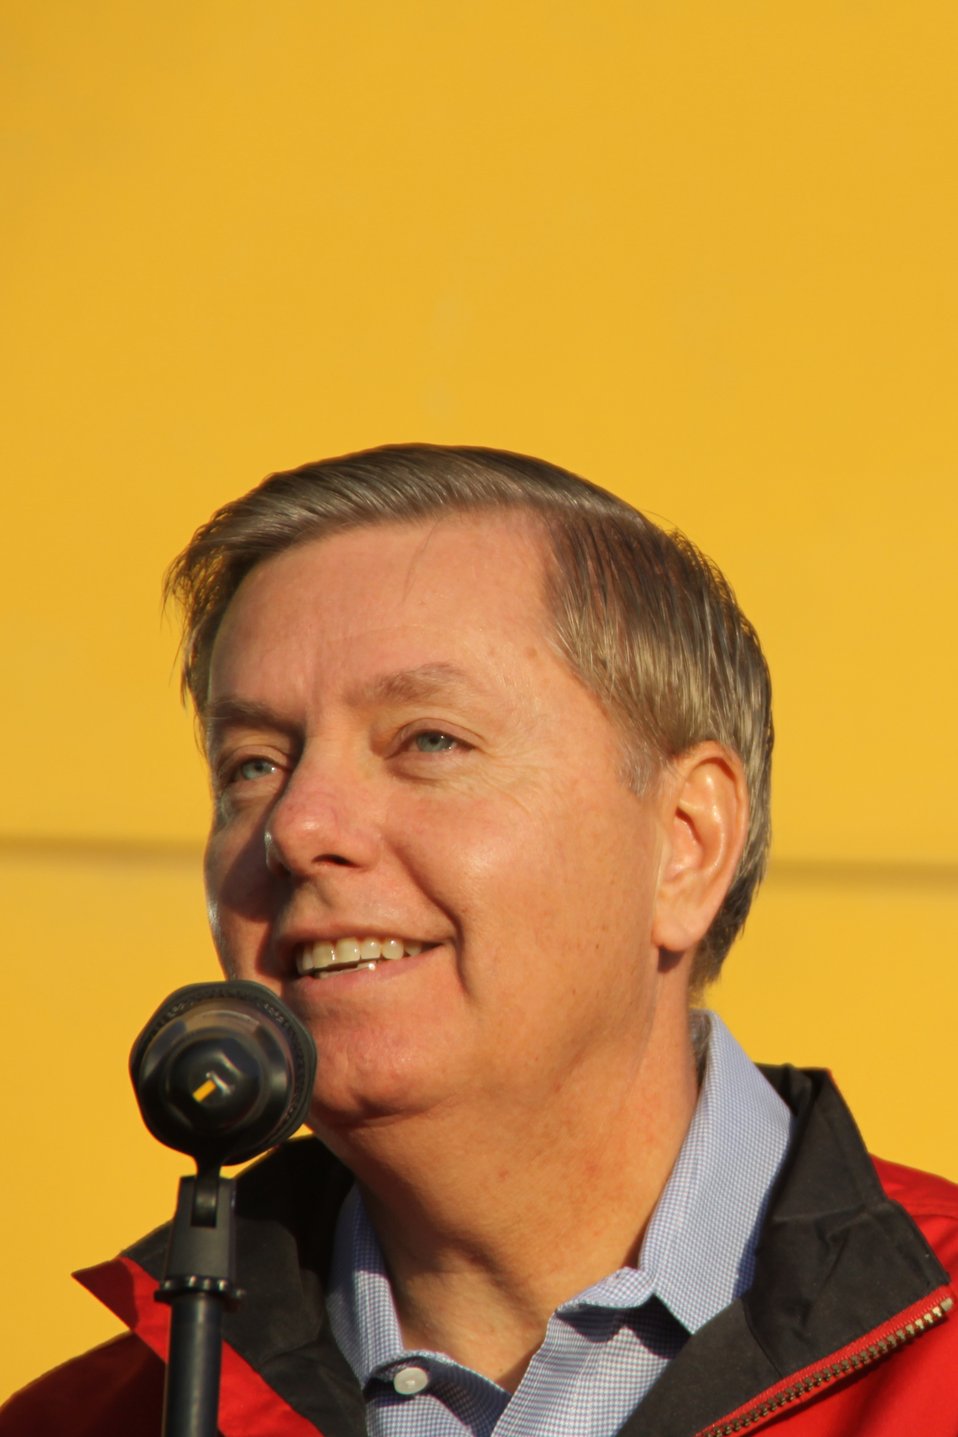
Senator Graham